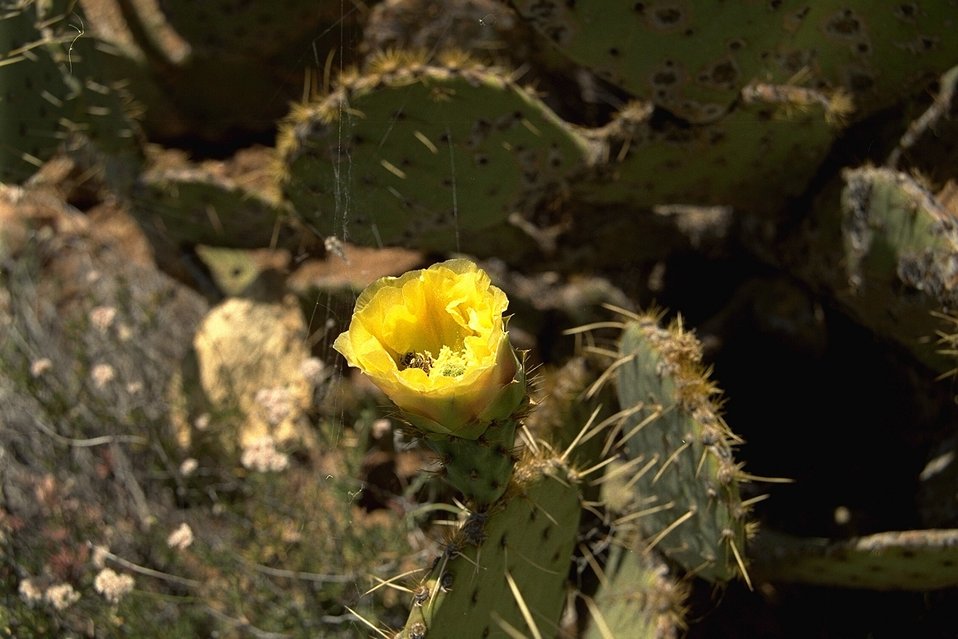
A flower blooming on a Prickly Pear cactus.